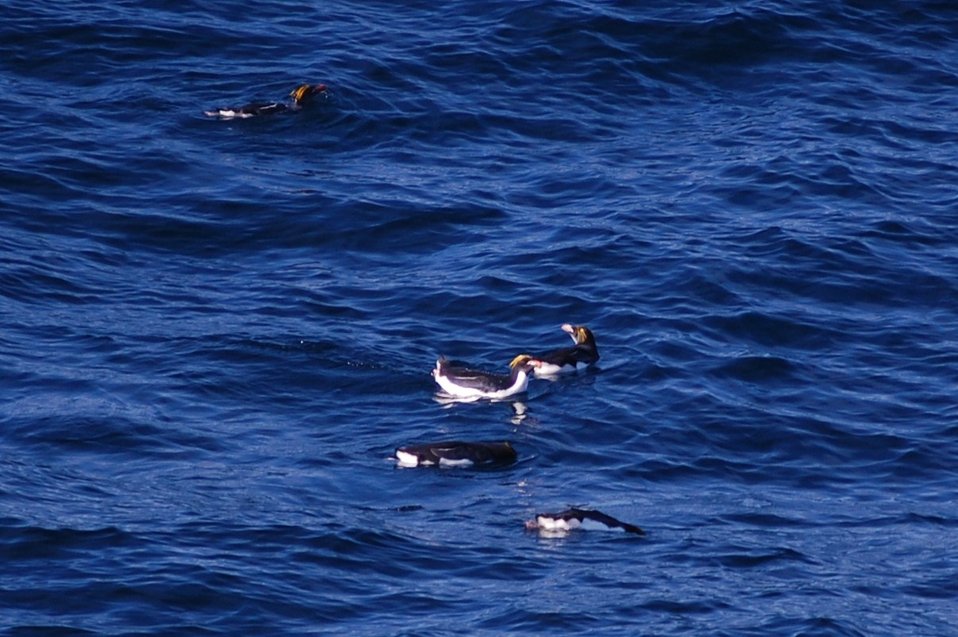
Macaroni penguins.